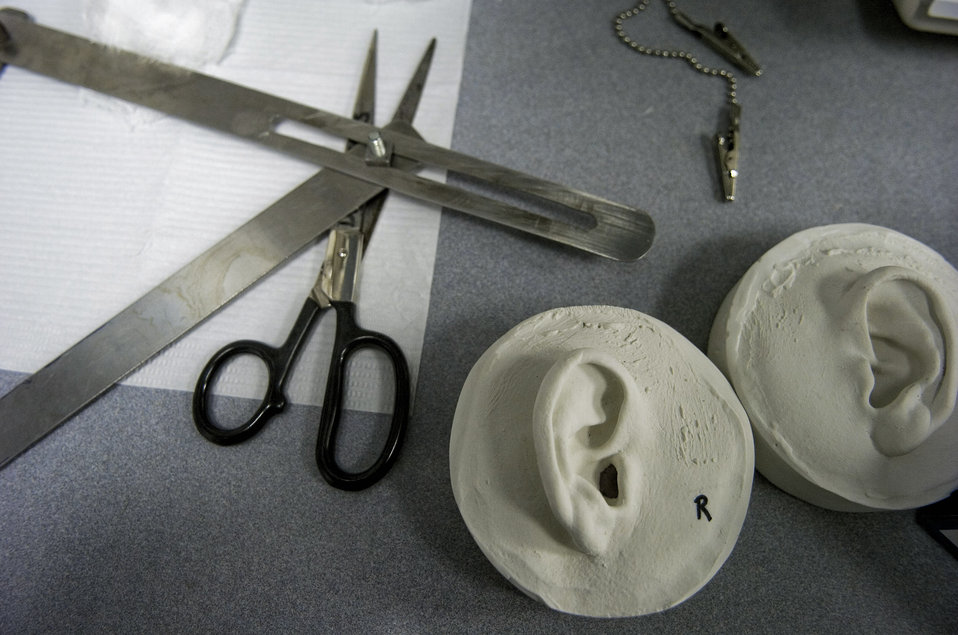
Wounded warrior receives new ears

A 3-D model resin prosthesis mold of ears and tools lie on a table at the McGowan Dental Clinic Sept. 29 at Lackland Air Force Base, Texas. Maxillofacial prosthodontists of the 59th Medical Wing create ears, eyes and noses for military members that have been injured during duty.